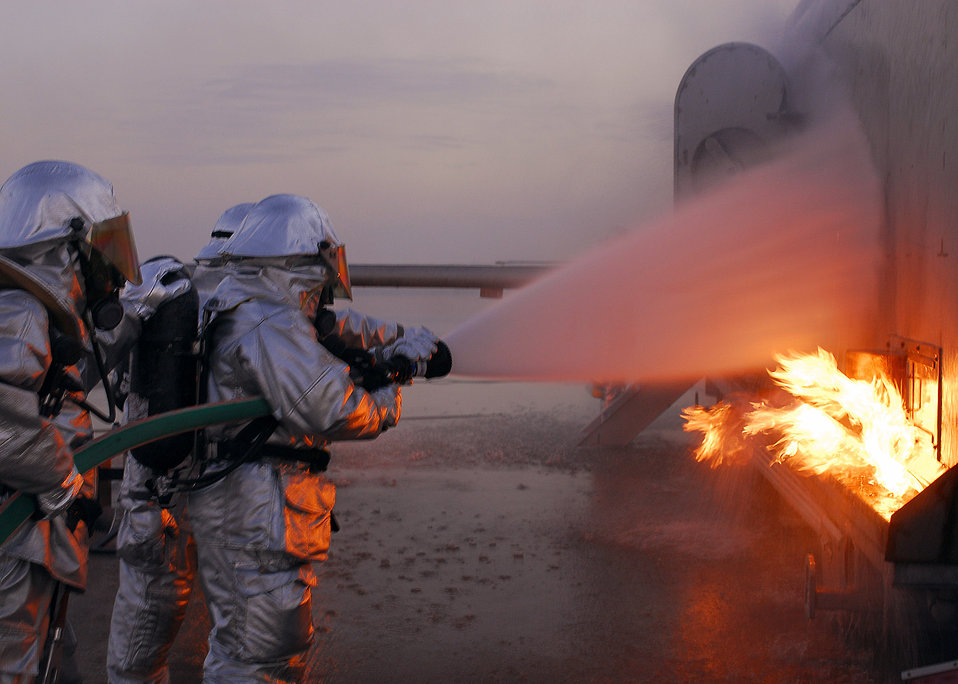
Burning desire

Firefighters from the 386th Expeditionary Civil Engineer Squadron extinguish a fire on an aircraft fire trainer Nov. 24 at an air base in Southwest Asia. The firefighters must complete one daytime and nighttime live fire burn annually.